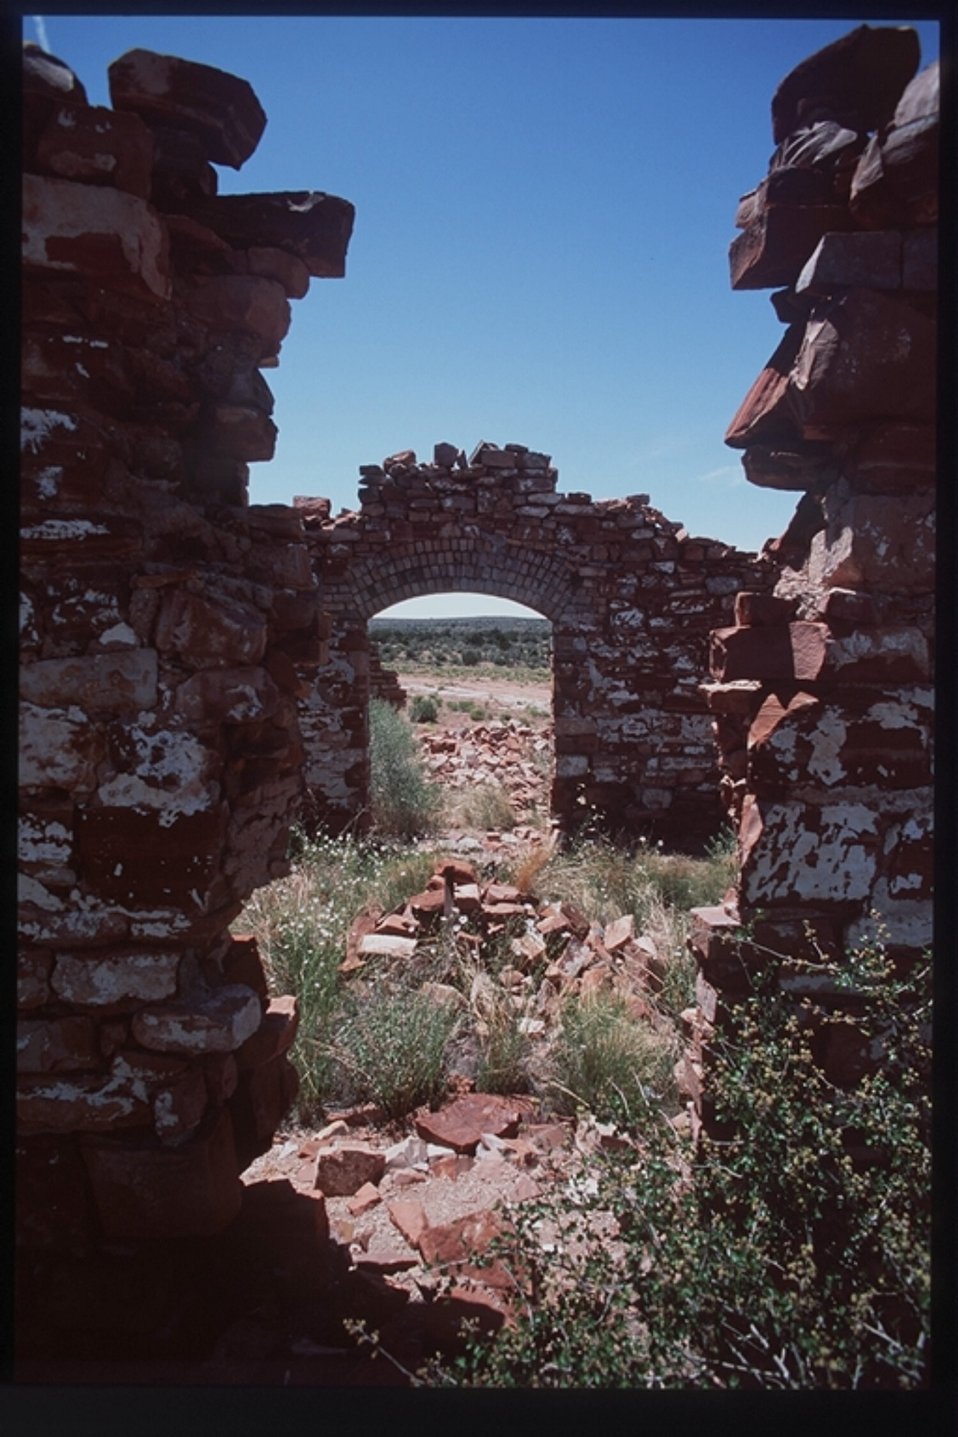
The Grand Canyon-Parashant National Monument was designated by President Clinton in January 2000. The monuments remote open, undeveloped area and engaging scenery is located on the edge of the Grand Canyon.